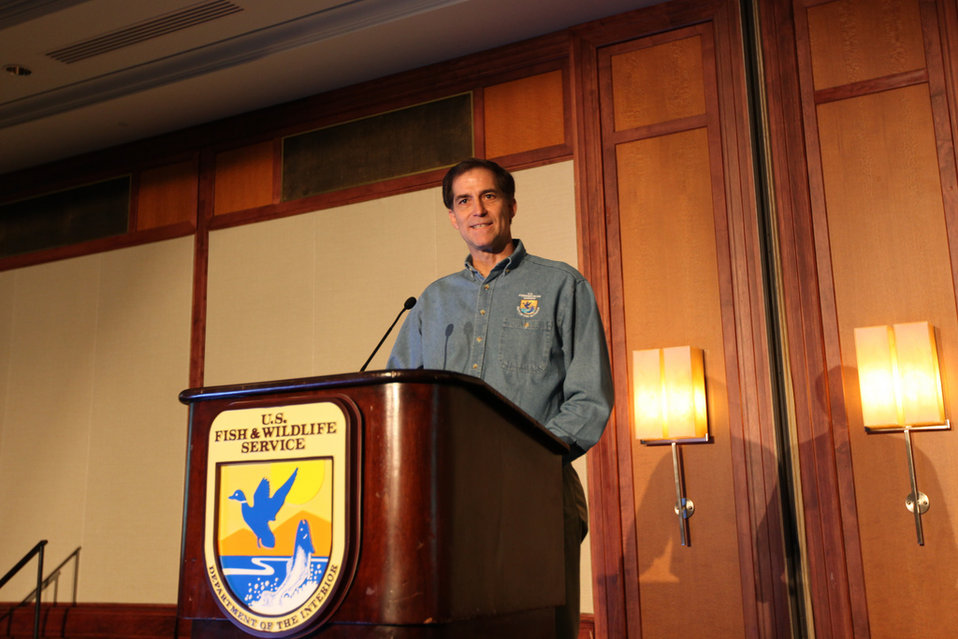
Dan Ashe speaking at the Northeast Region Biologists Conference.